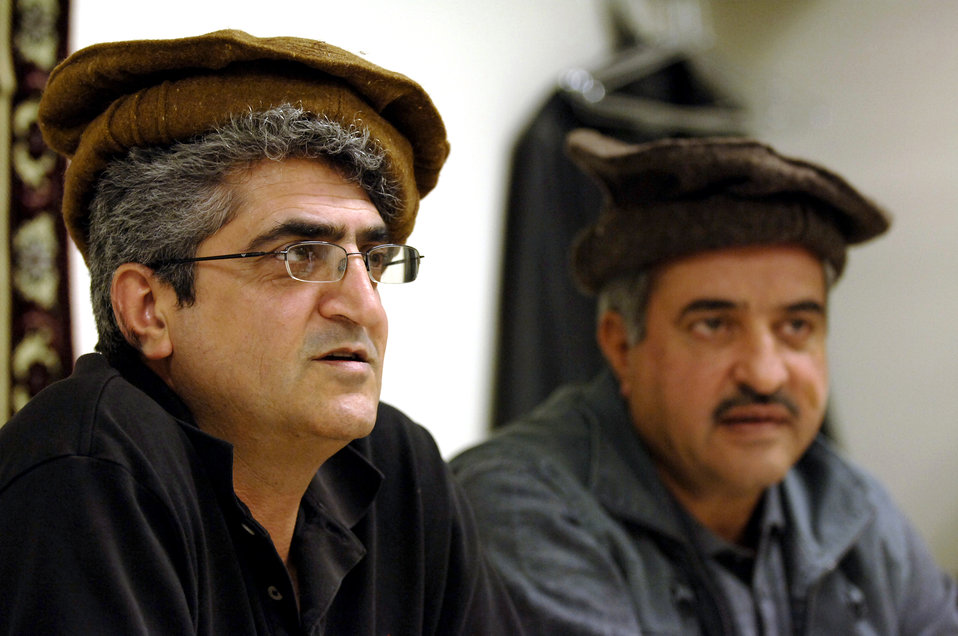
Airmen prepare 10th Mountian Division

FORT DRUM, N.Y. (AFPN) -- Reza Mohammady (left) a Unified Endeaver 06 exercise role player, and an associate negotiate with members of the 10th Mountain Division. Mr. Mohammady, a member of a group that helps train military members on Afghan customs and courtesies before they deploy in support of Combined Joint Task Force, played his part Oct. 20.